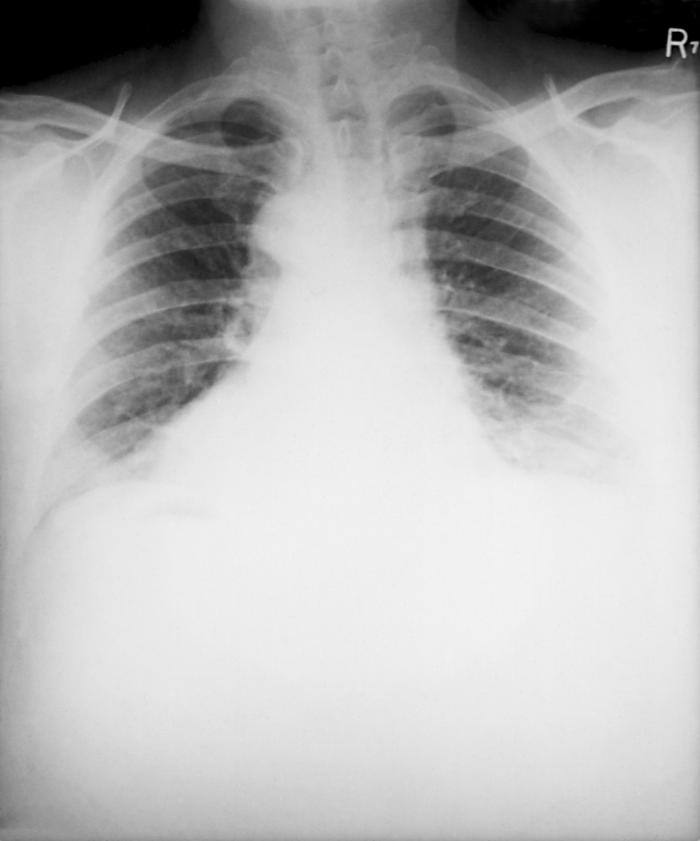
This posteroanterior (PA) chest x-ray was taken 4 mo. after the onset of anthrax in a 46 yr. old male.